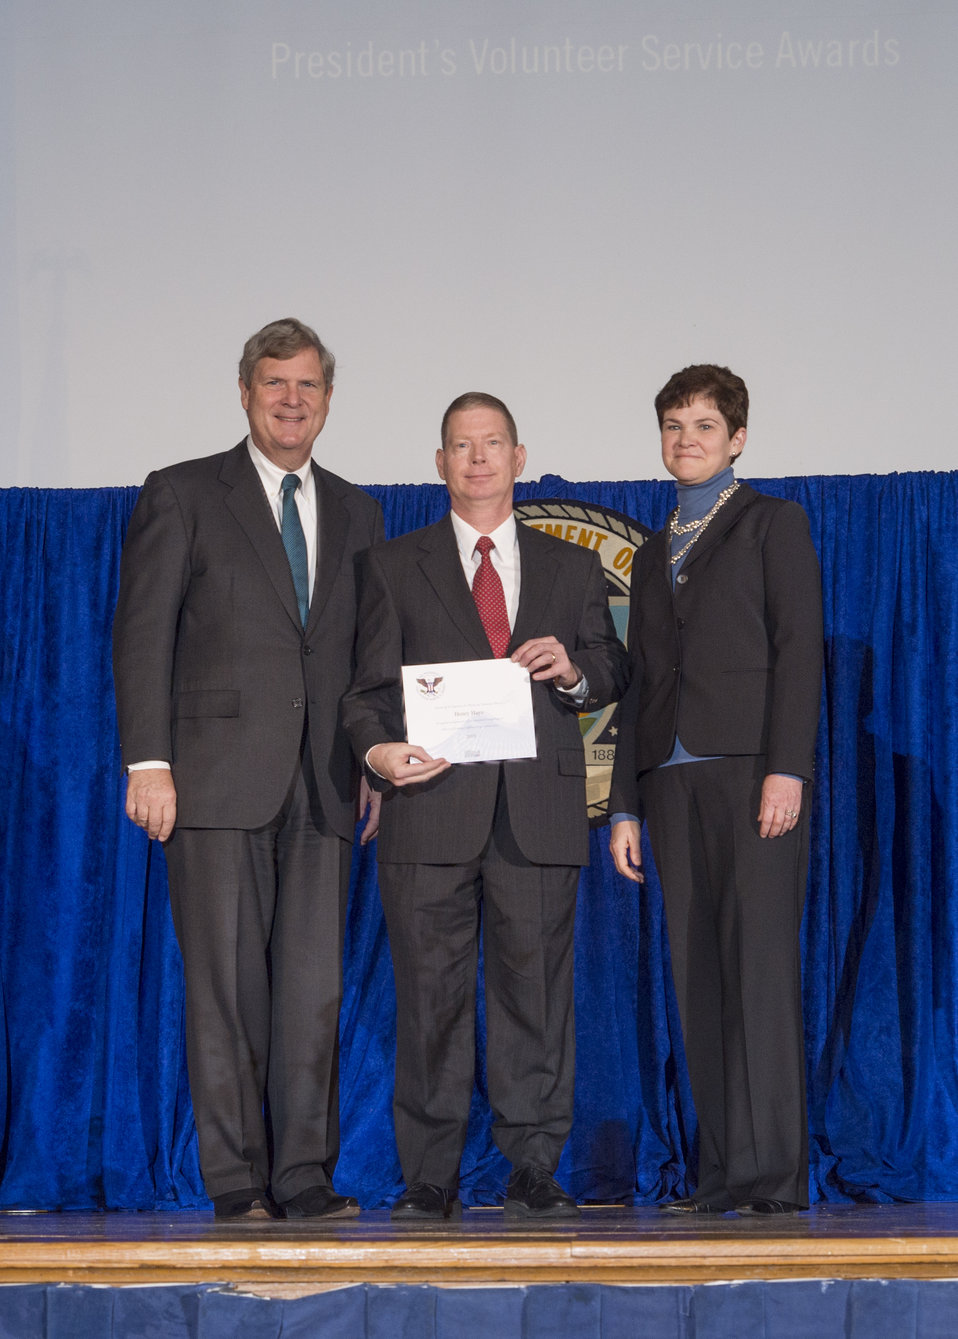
Agriculture Secretary Tom Vilsack and Agriculture Deputy Secretary Krysta Harden present the President’s Silver Volunteer Service Award to Henry Hays at the 2013 Secretary's Honor Awards in the Jefferson Auditorium at the U.S. Department of Agriculture (USDA) in Washington, D.C. on Wednesday, Dec. 11, 2013. The President’s Silver Volunteer Service Award is given to an employee that has served a minimum of 250 ours and a maximum of 499 hours of service.